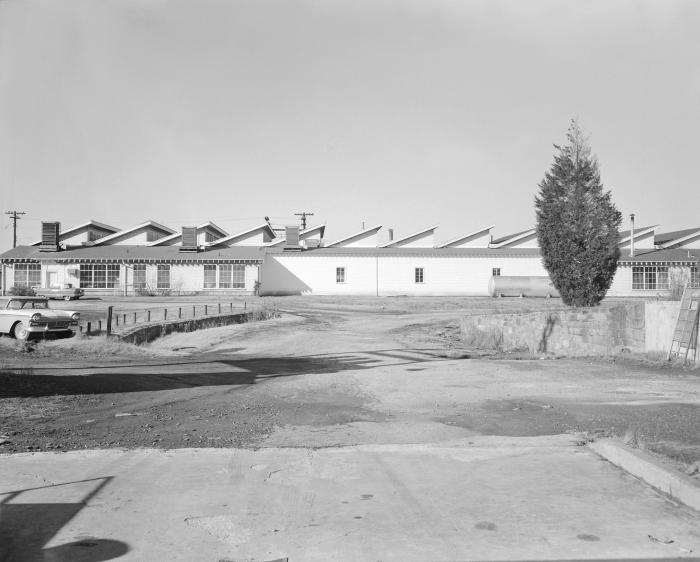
This 1957 photograph showed the exterior of the Lawson Building #5, located on the Centers for Disease Control's Chamblee Campus.